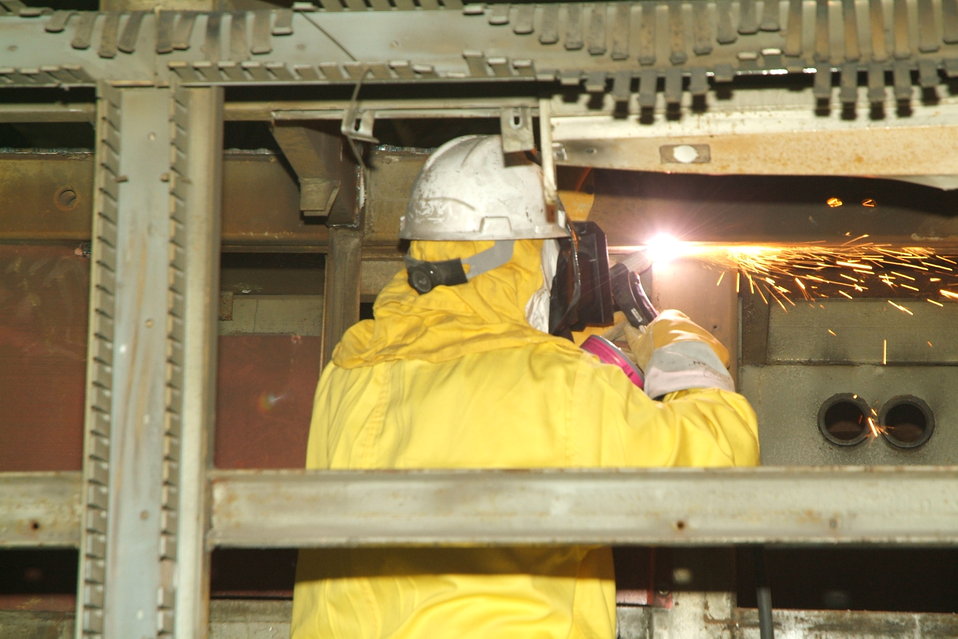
Paducah cleanup

A Recovery Act worker cuts equipment loose from the East End Smelter. Specialized training at West Kentucky Community & Technical College helped provide the skills needed to clean up old, inactive buildings at the Paducah Site.